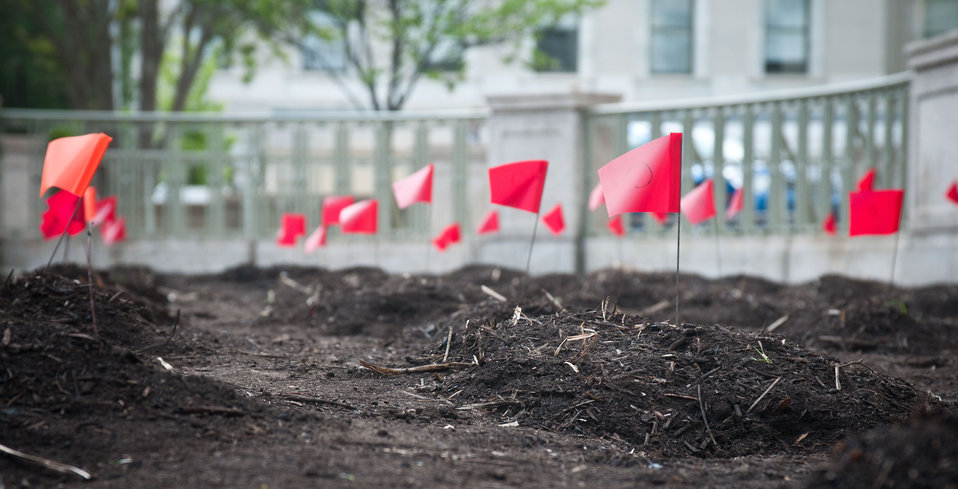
Flags mark freshly planted ground by more than 30 Students from Eastern and Western Tribes, Southeast Alaska, and Tuba City, Arizona came to the Nation’s Capitol to plant vegetable seeds that are indigenous to North America. The garden is called The Roots of American Agriculture, and is part of the Headquarters’ People’s Garden, at the U.S. Department of Agriculture in Washington, DC on Wednesday, April 21, 2011.